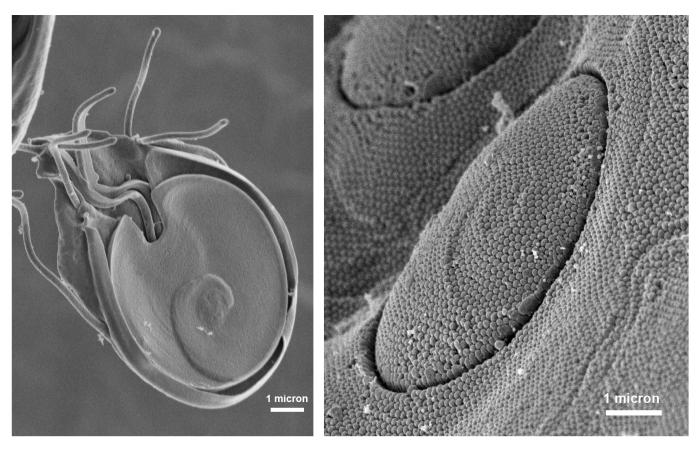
These scanning electron micrographs (SEM) revealed the ultrastructural morphology of a Giardia protozoan's ventral adhesive disk on the left, and the circular lesion on the right, which can be left on the intestinal mucosal surface, as a result of the tight adhesion of this disk to the intestine's microvillous border.